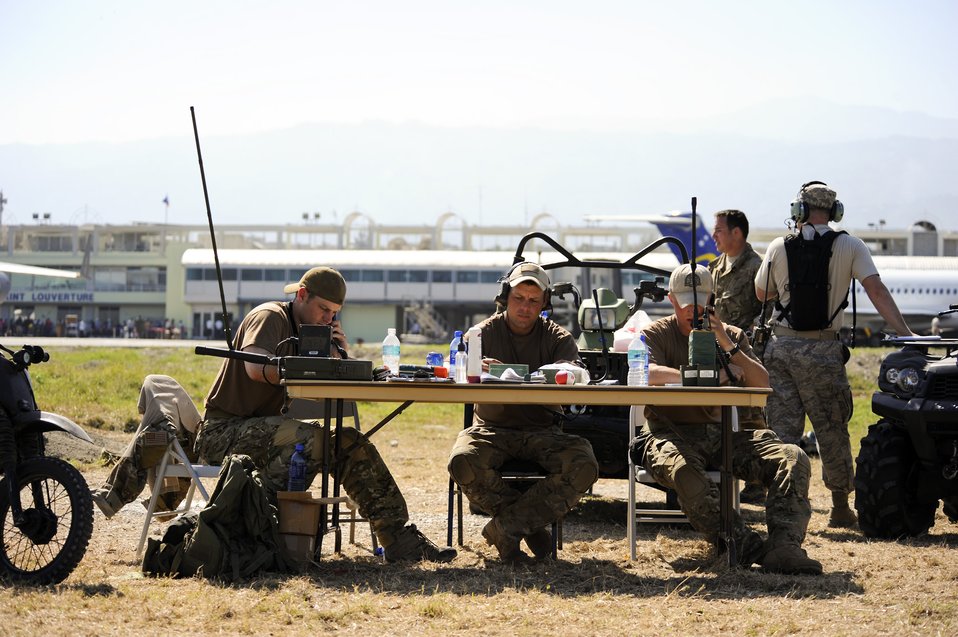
Combat controllers at work

Combat controllers talk to aircraft circling the Toussaint L'Ouverture International Airport in Port-au-Prince, Haiti, Jan. 23, 2010. The Airmen are from the 23rd Special Tactics Squadron at Hurlburt Field, Fla. In the initial days of Operation Unified Response air operations were similar to the Berlin Airlift with aircraft landing every five minutes. Now, aircraft from all over the world are still flying in and out to drop off humanitarian aid and transport people out of the Haiti.